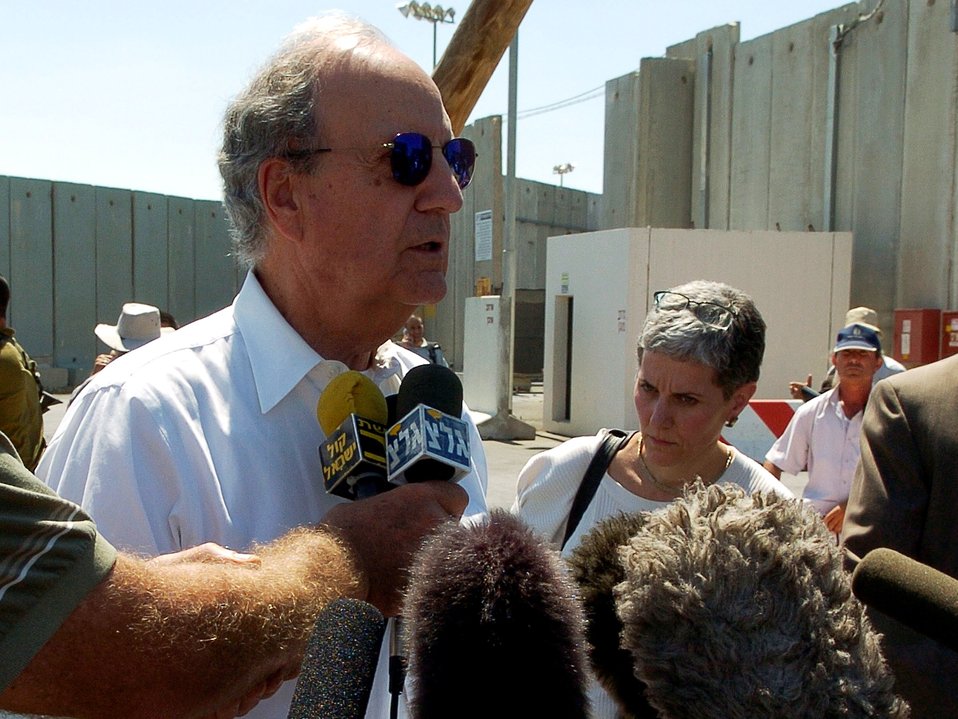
Special Envoy Mitchell Responds to Questions from Reporters

U.S. Special Envoy for Middle East Peace George Mitchell responds to question from reporters during his visit to the Kerem Shalom crossing on the border of the Gaza Strip on June 30, 2010.